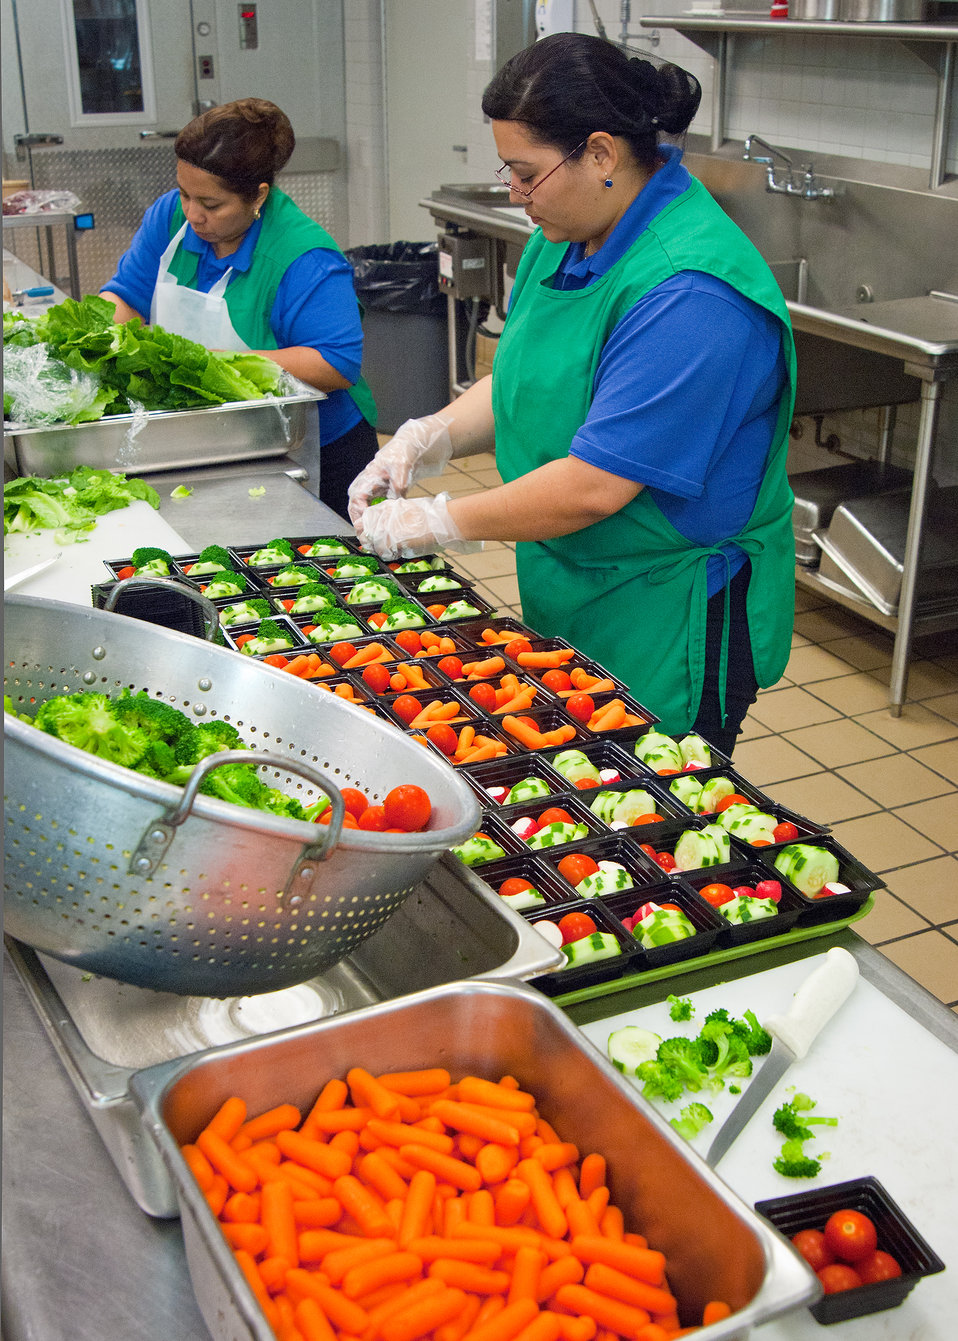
Magaly Valentin (left), and Rosalba Gomez (right) Arlington Food Services prepare fresh salads and vegetable cups for the National School Lunch Program in the kitchen at Washington-Lee High School in Arlington, Virginia, Wednesday, October 19, 2011. The National School Lunch Program is a federally assisted meal program administered by the United States Department of Agriculture, Food and Nutrition Service operating in public, nonprofit private schools and residential child care institutions. It provides nutritionally balanced, low-cost or free lunches to children each school day.